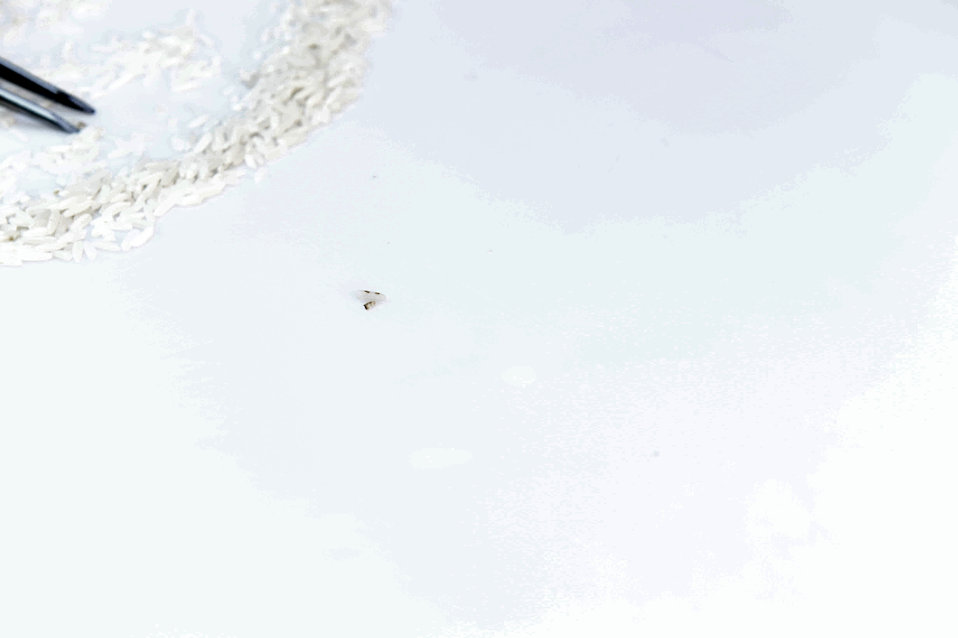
U.S. Department of Agriculture (USDA) Grain Inspection, Packers and Stockyards Administration (GIPSA) Federal Grain Inspection Service (FGIS) employee examines rice samples on white background to check for imperfections at the FGIS inspection laboratory in New Orleans, LA on Monday, Nov. 18, 2013.